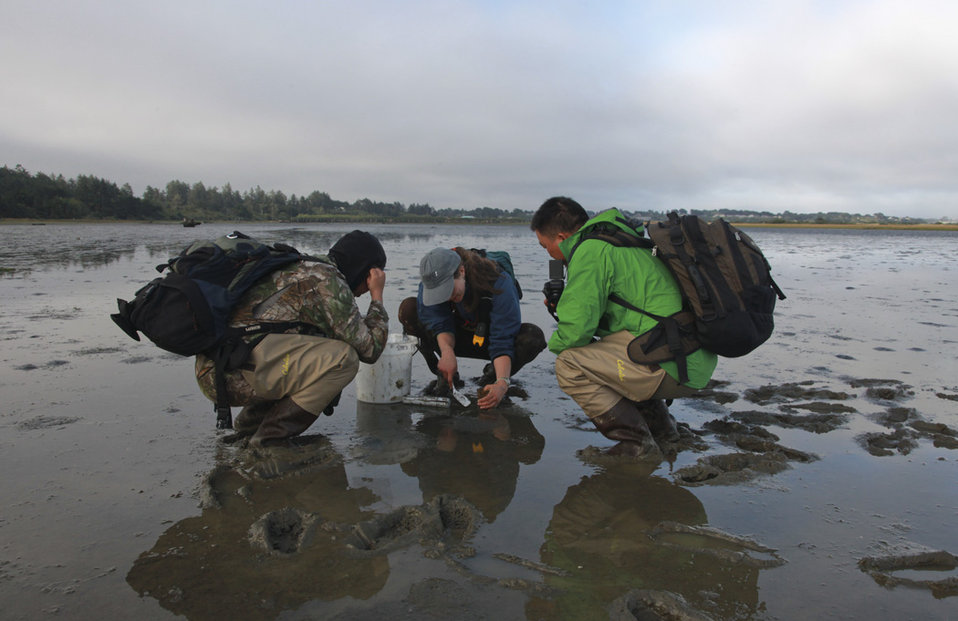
Substrate Sampling